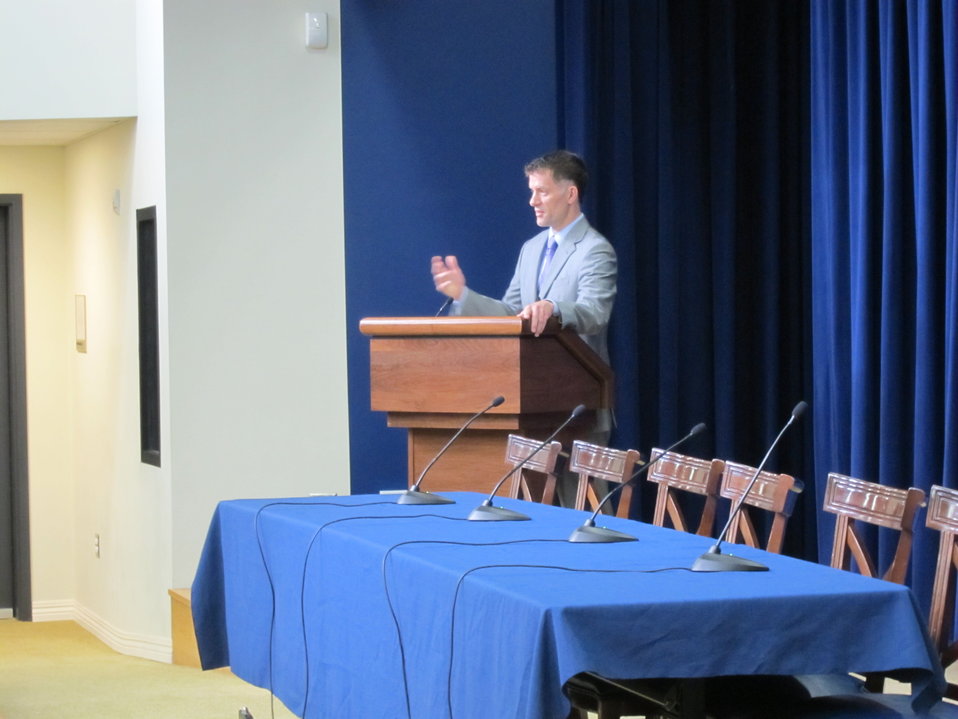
WH 2012 World Hepatitis Day Event